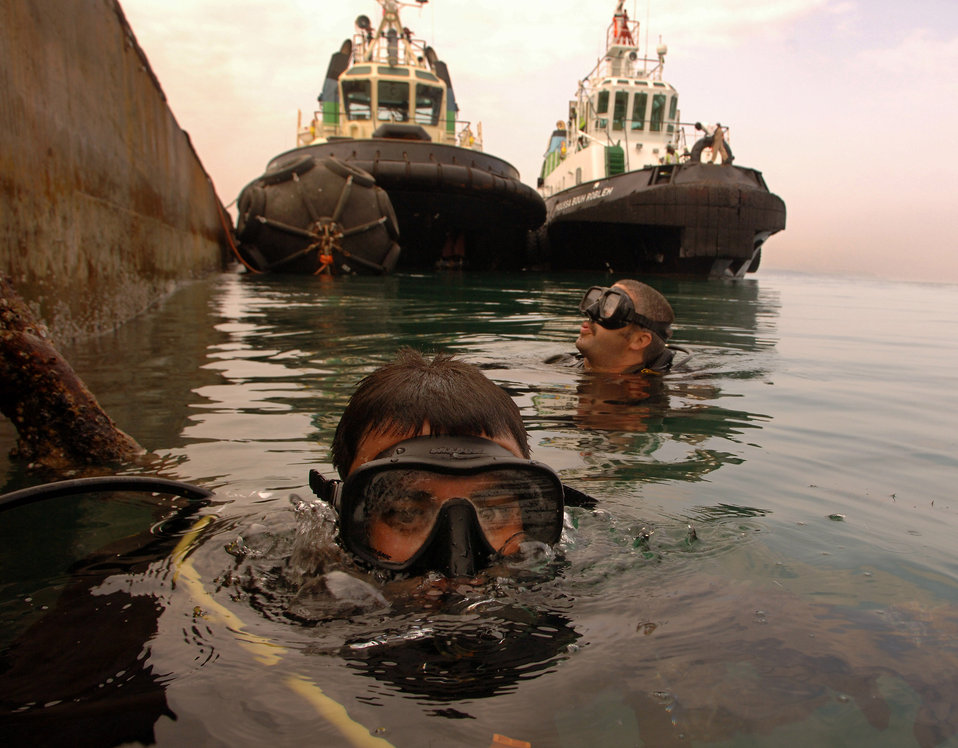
Port secured

Navy divers inspect a pier at the Port of Djibouti City Dec. 19 prior to the arrival of a U.S. fuel ship. Securing the Djiboutian port for incoming vessels requires the coordinated effort of Djibouti and U.S. military teams.